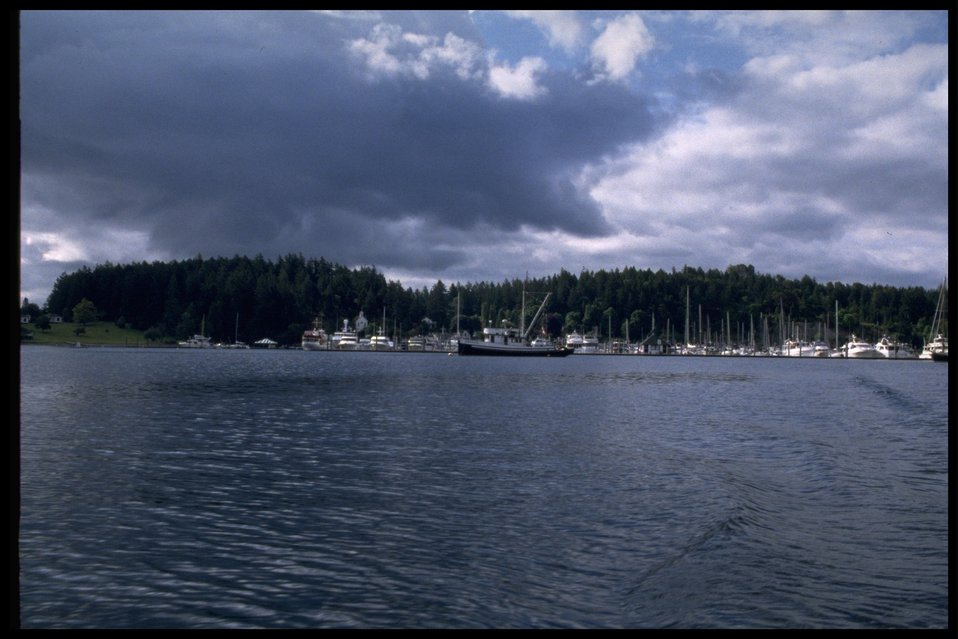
Leaving Roche Harbor on Lopez Island on way to Turn Point.